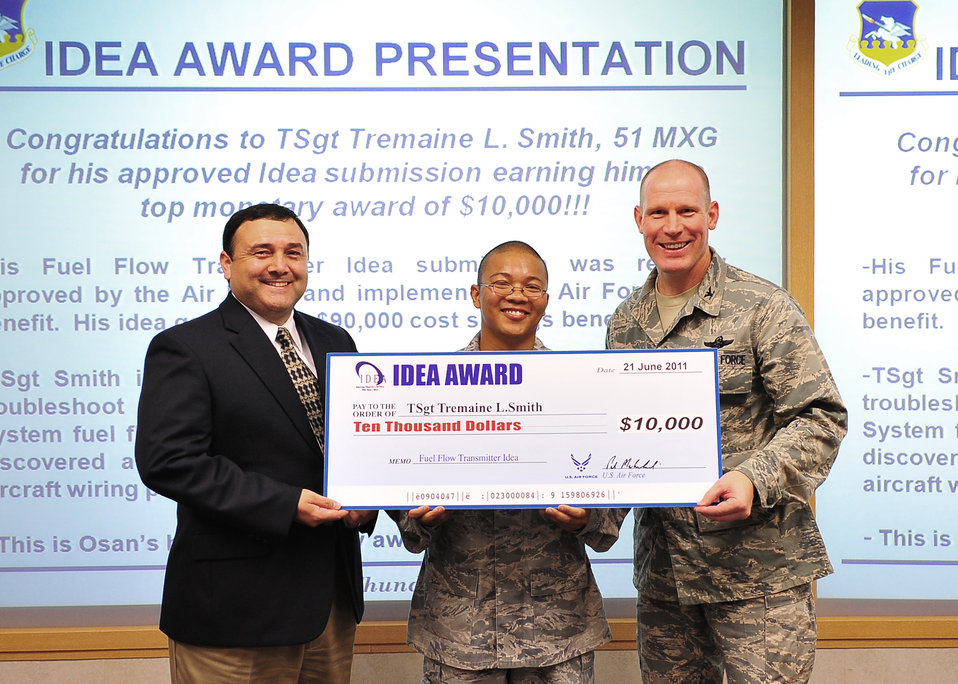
IDEA winner

Col. Patrick Malackowski and Ed Moreno present Tech. Sgt. Tremaine Smith with a check for $10,000 June 21, 2011, at Osan Air Base, South Korea. Sergeant Smith was recognized through the Innovative Development Employee Awareness program for an idea that fixed a fuel-flow transmitter problem, saving the Air Force more than $90,000 in replacement costs over the next year.